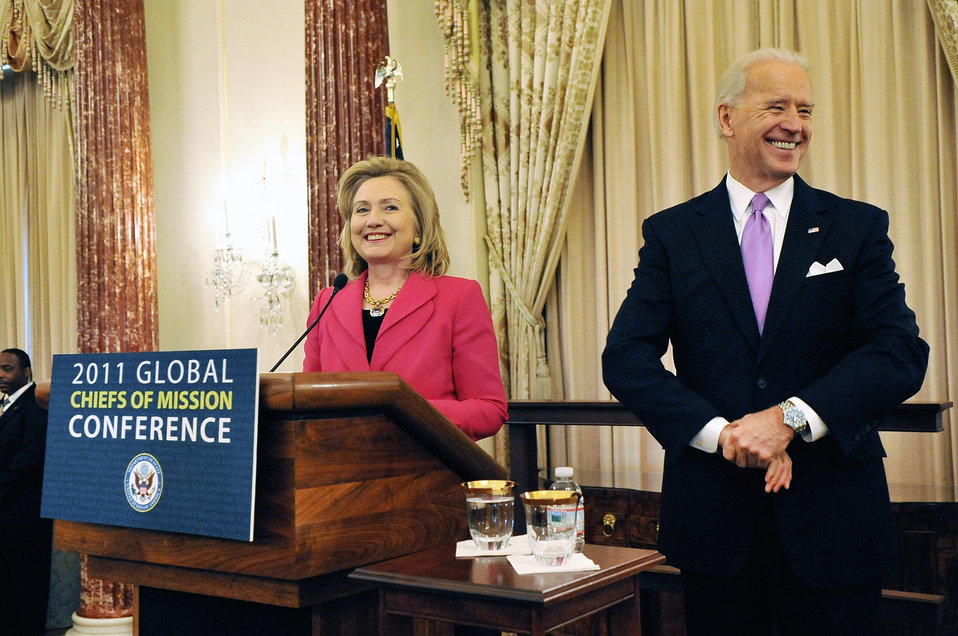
Secretary Clinton Introduces Vice President Biden

U.S. Secretary of State Hillary Rodham Clinton introduces U.S. Vice President Joseph Biden to speak at the 2011 Global Chiefs of Mission Conference at the U.S. Department of State in Washington, D.C., on January 3, 2011.